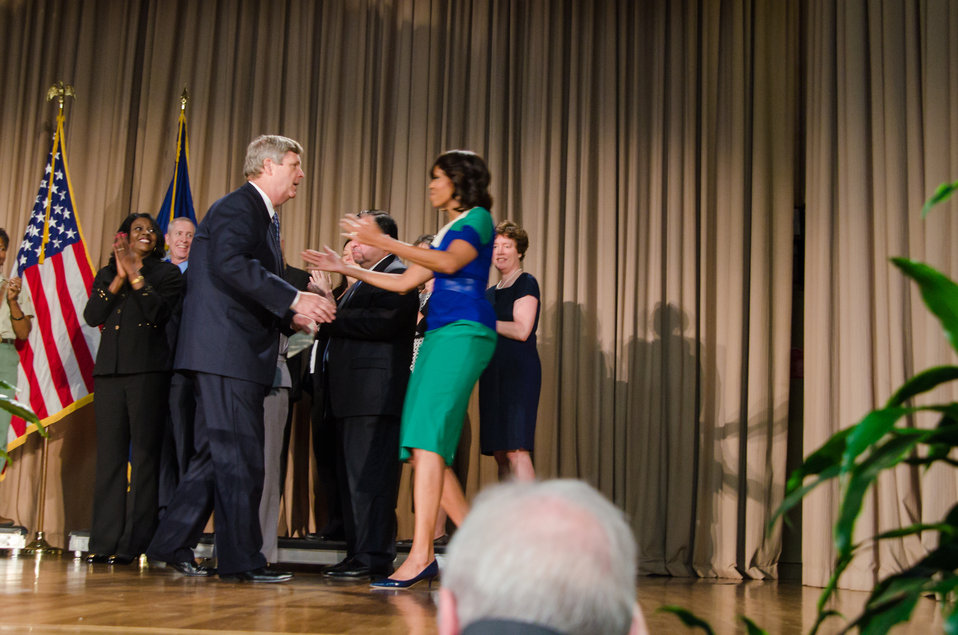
Agriculture Secretary Tom Vilsack welcomes First Lady Michelle Obama to the U.S. Department of Agriculture (USDA) in Washington, D.C. on Friday, May 3, 2013. Mrs. Obama visited USDA to thank employees for their service and dedication. The First Lady reminded federal workers of the importance of the work they do to support American farmers and ranchers, protecting the environment, lifting up rural communities, and keeping food safe, and working to end hunger.